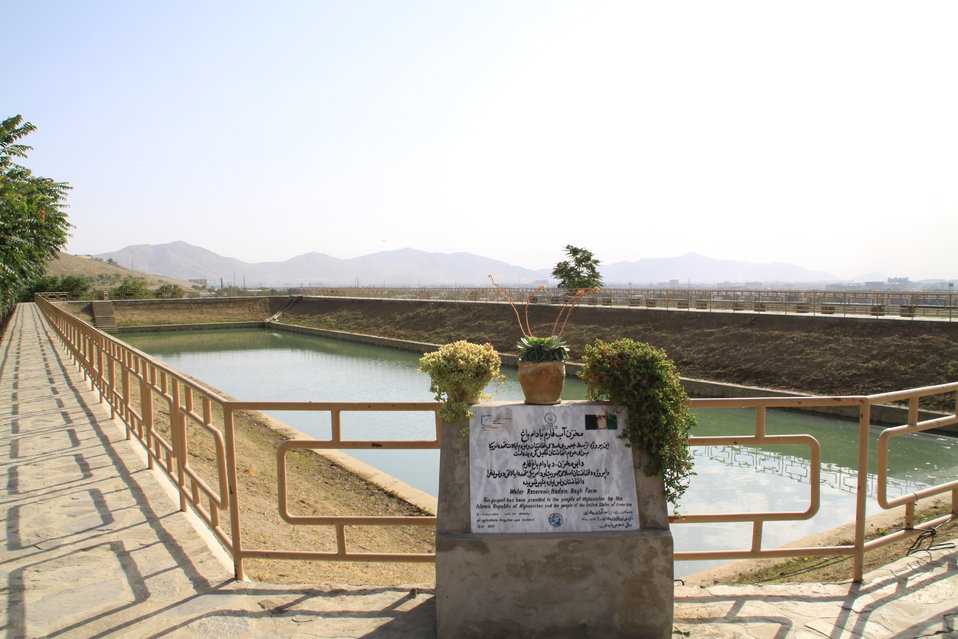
Badam Bagh Farm